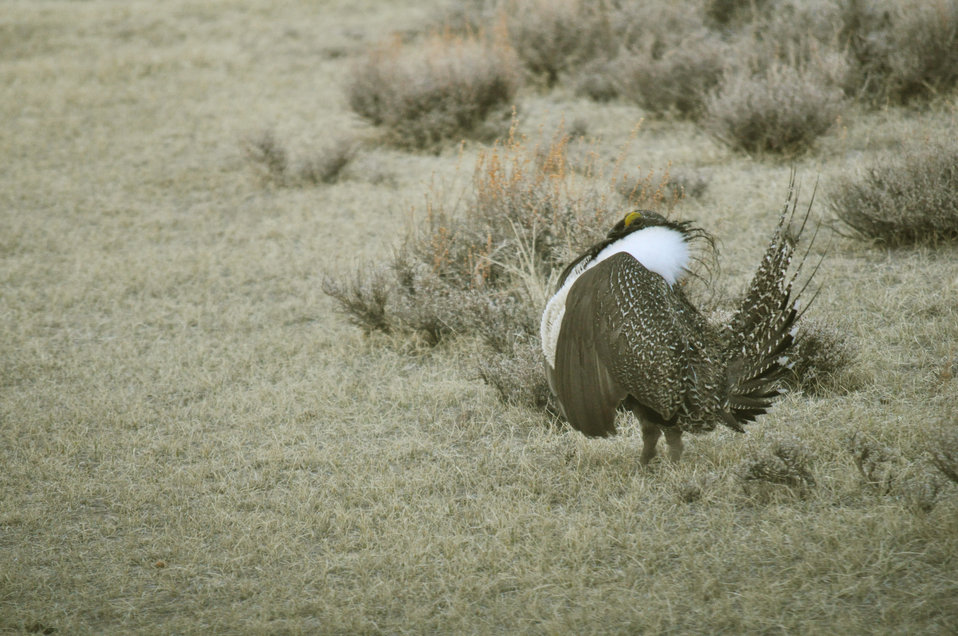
Male greater sage-grouse struts at lek (dancing or mating grounds) to attract females near Bodie, California.